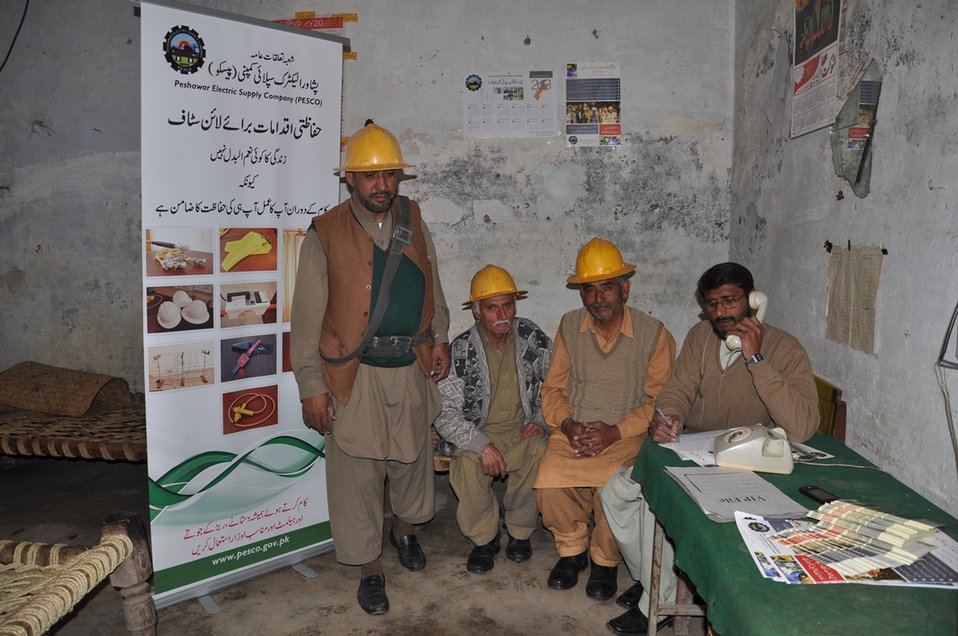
USAID helps power distribution companies to reach out consumers

The USAID Power Distribution Program is facilitating PESCO’s PR department in reaching out to consumers, through the provision of consumer outreach material. This material better assists PESCO in informing consumers about energy conservation, electricity theft and energy efficiency. PESCO is utilizing this material in its own conservation campaigns which will effectively contribute in PR capacity building and in promoting a softer image of the company.